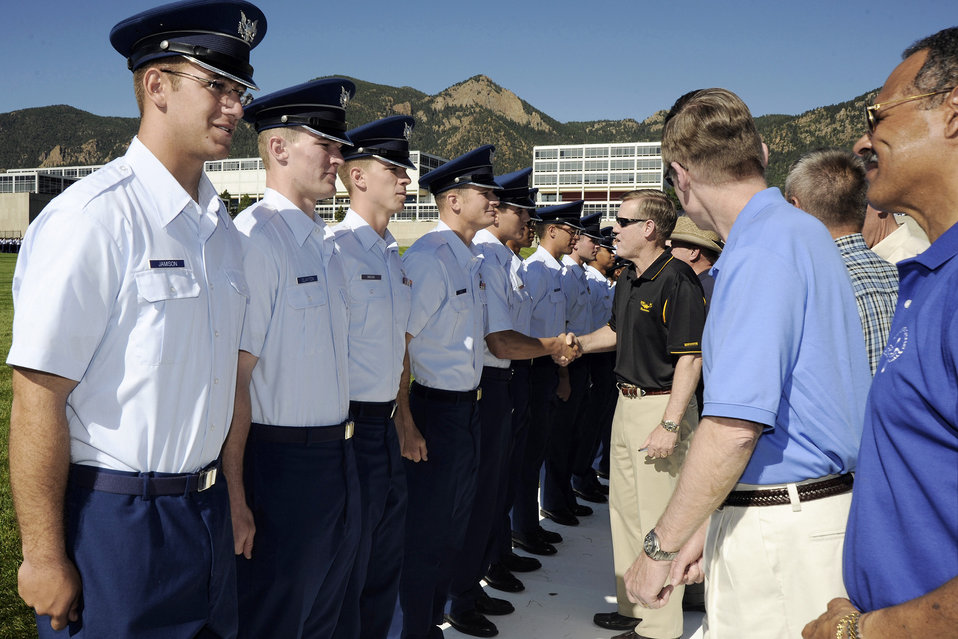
Academy acceptance parade

Members of the U.S. Air Force Academy Class of 1973 present members with the cadet handbook,